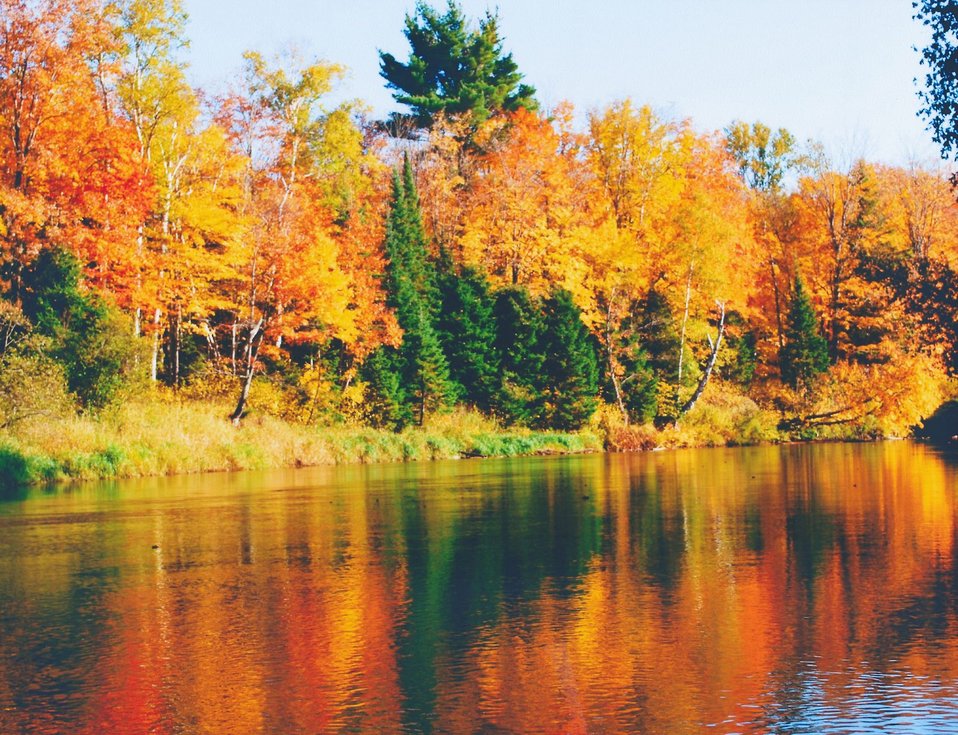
Seney National Wildlife Refuge, MI
Photo: Autumn Reflection. Credit Keri Boothe, 2012 Friends of Seney Photo Contest, 3rd Place Landscape Category